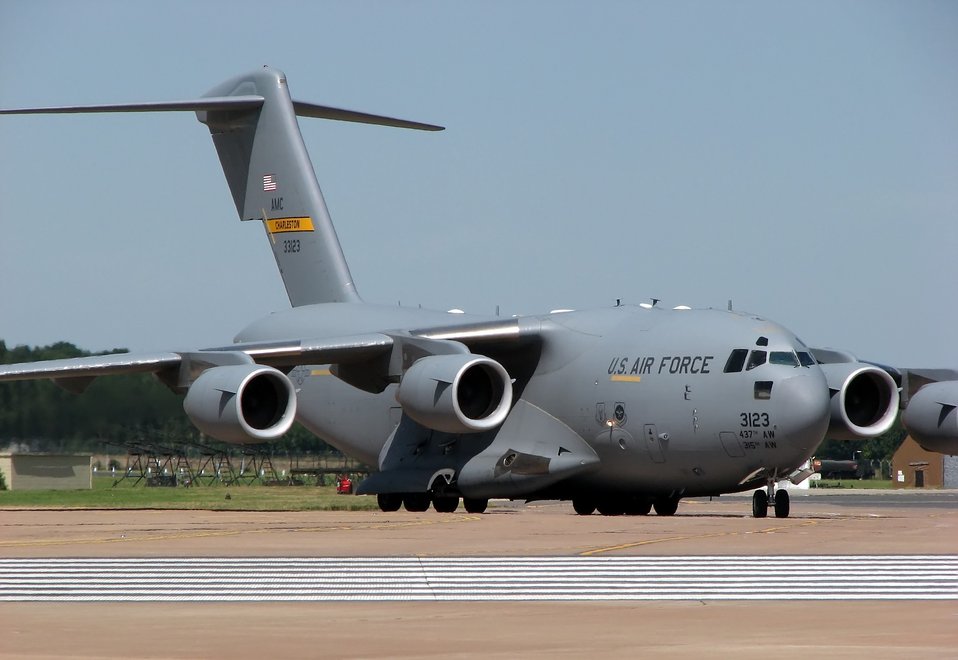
C17.globemaster.arp